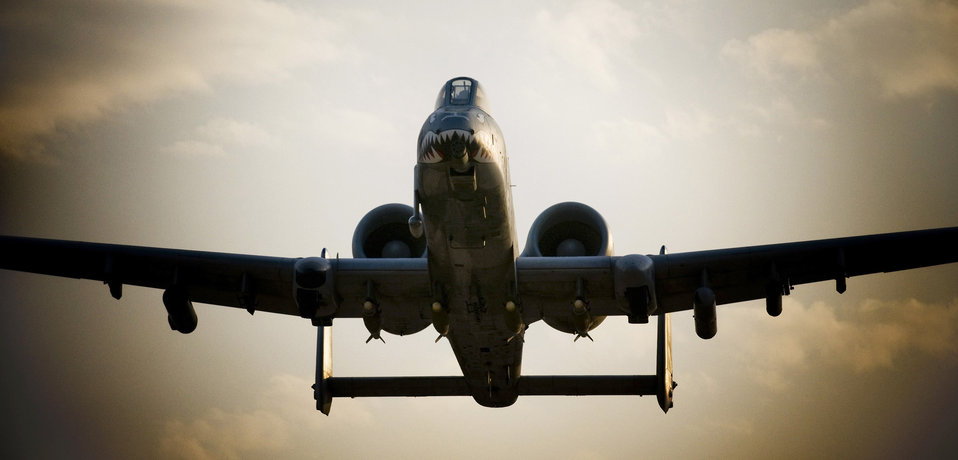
A-10s deter enemy activities

An A-10 Thunderbolt II takes off from Bagram Air Field in support of Operation Enduring Freedom.